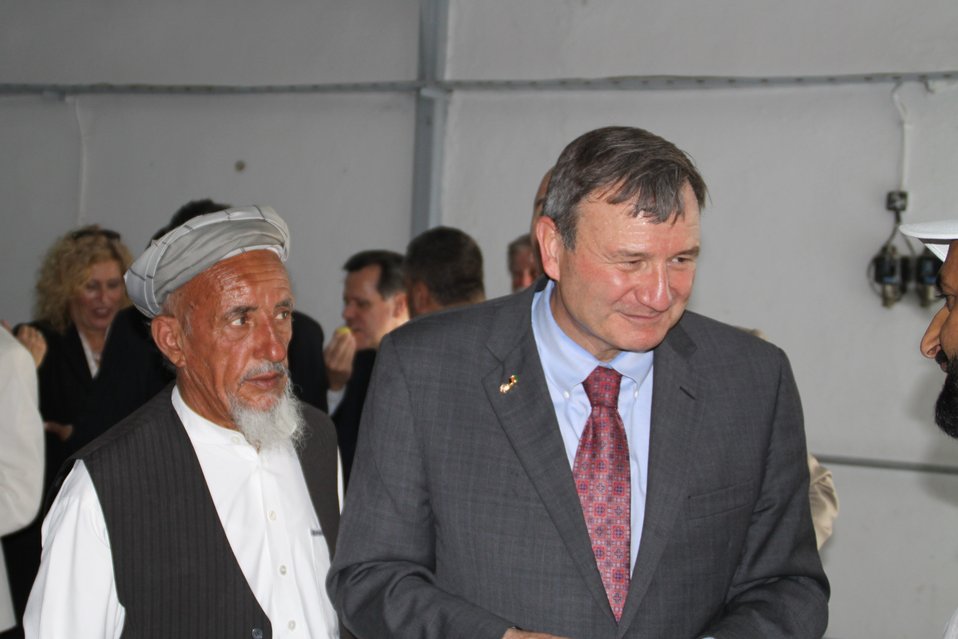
Badam Bagh Farm